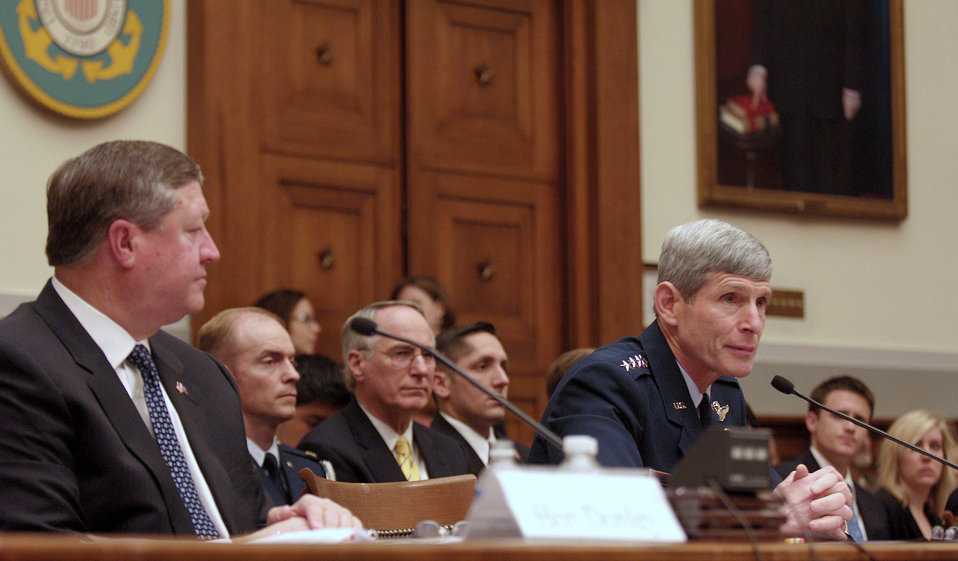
Leaders issue posture statement

Air Force Chief of Staff Gen. Norton Schwartz (right) testifies with Secretary of the Air Force Michael Donley before the U.S. House Armed Services Committee on the current Air Force posture May 19 in the Rayburn Building in Washington, D.C. The two Air Force leaders spent most of the week before both the House and Senate.